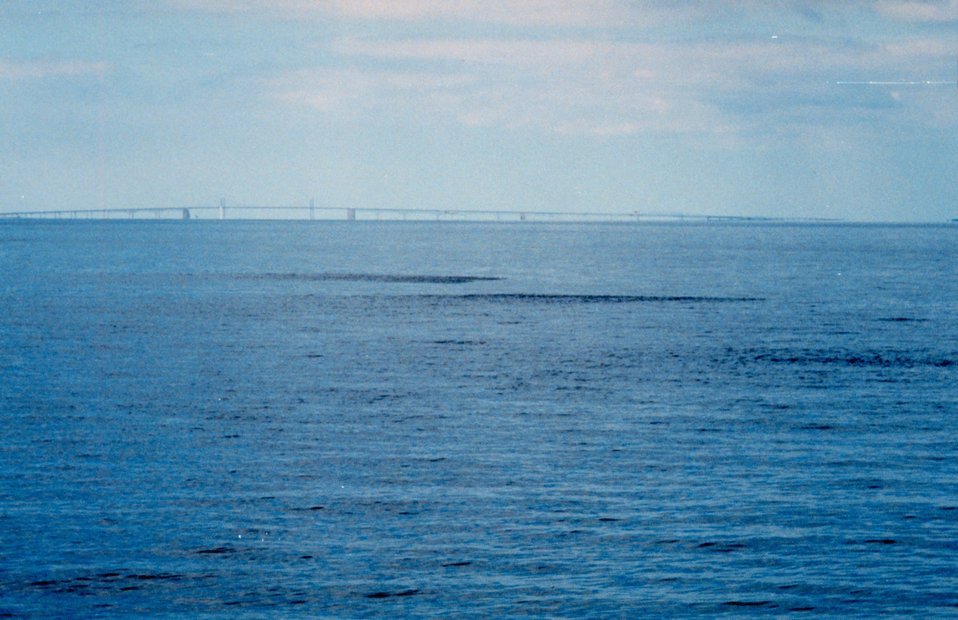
Several schools of Alewives, or 'bait fish', can be seen breaking the surface on a calm Chesapeake Bay day. These fish are an important food source for Rockfish , Bluefish, and other large fish in the bay. Bay Bridge can be seen in the background.